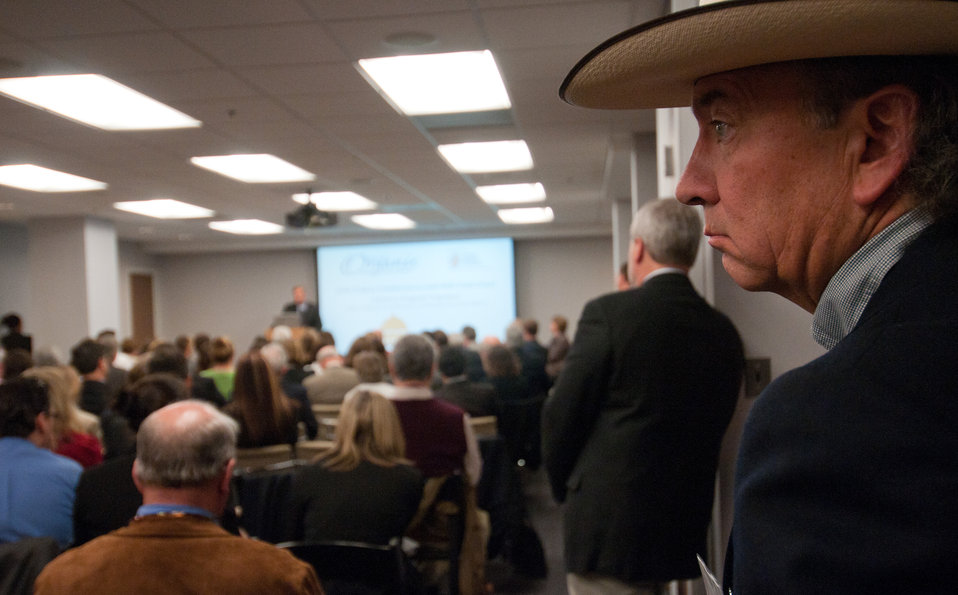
David Carter of the National Bison Association from Westminister, CO listens to U.S. Department of Agriculture Secretary Tom Vilsack spoke at the Organic Trade Association’s, 2011 Policy Conference, at the Hall of States, on Wednesday, April 6, 2011 in Washington, DC.